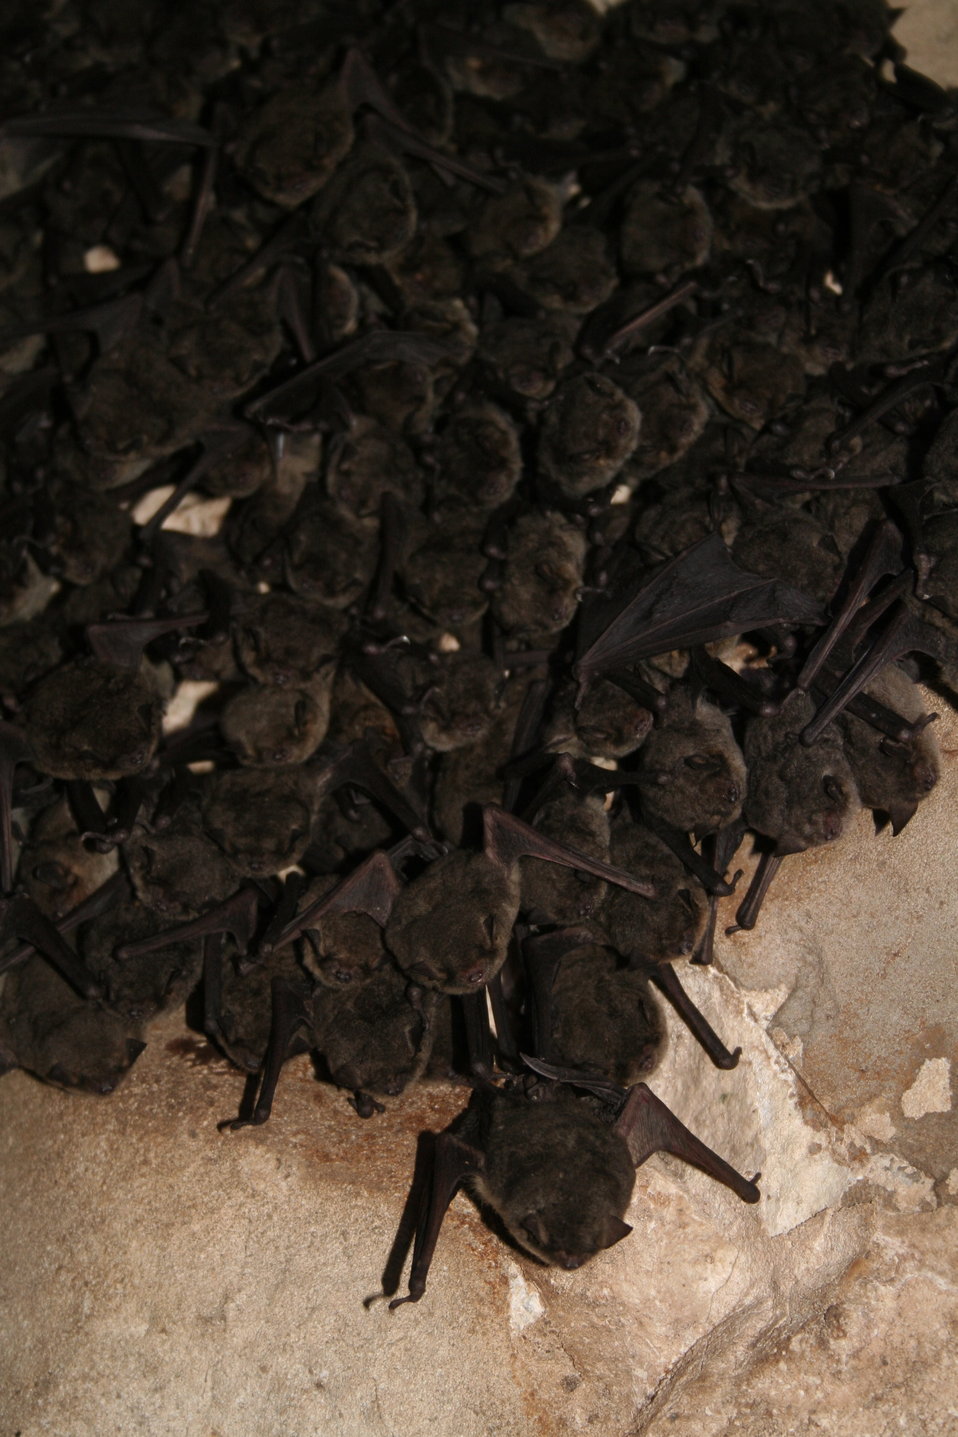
Cluster of gray bats

Cluster of hibernating gray bats (Myotis grisescens)